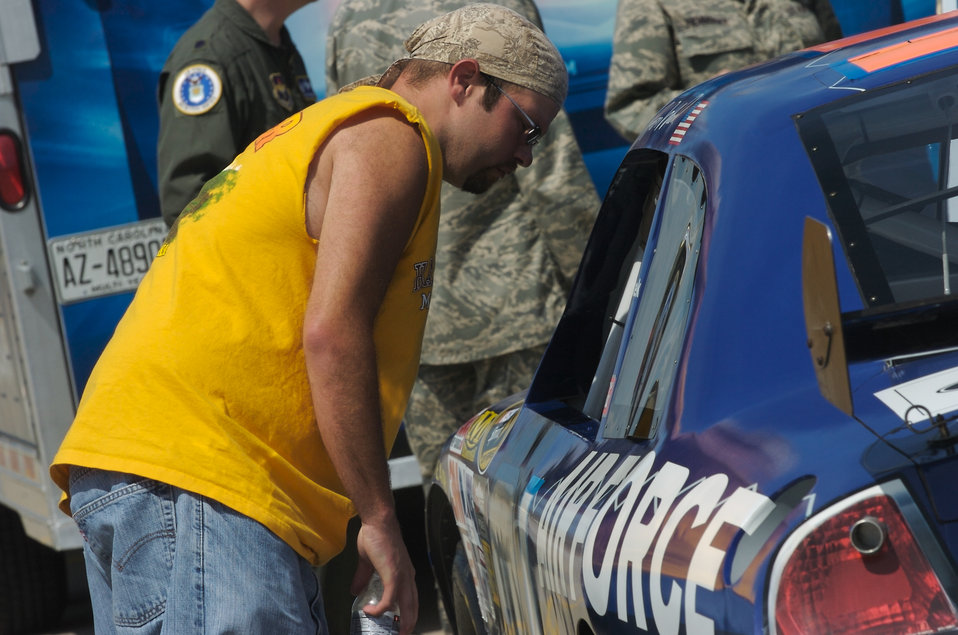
Hog wild

Joe Morgan takes a look into the Woods Brothers No. 21 Air Force Ford Fusion on display at the Dillon Brothers Harley-Davidson for Air Force Week in the Heartland Aug. 14 in Omaha, Neb. The race car and the Air Force Orange County Chopper were on display. Mr. Morgan is a resident of Arlington, Neb.